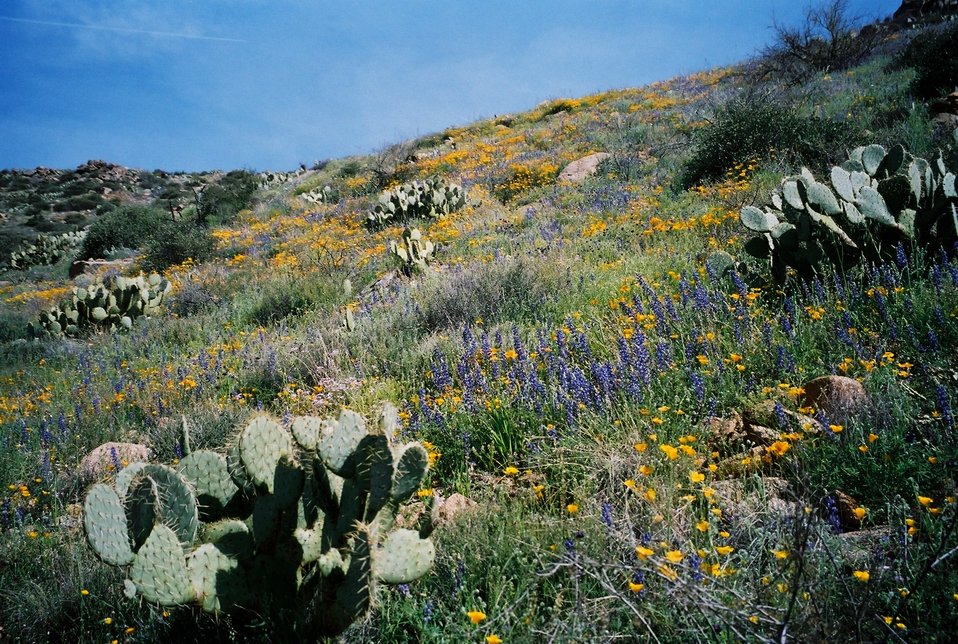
Wildflowers on the Agua Fria National Monument